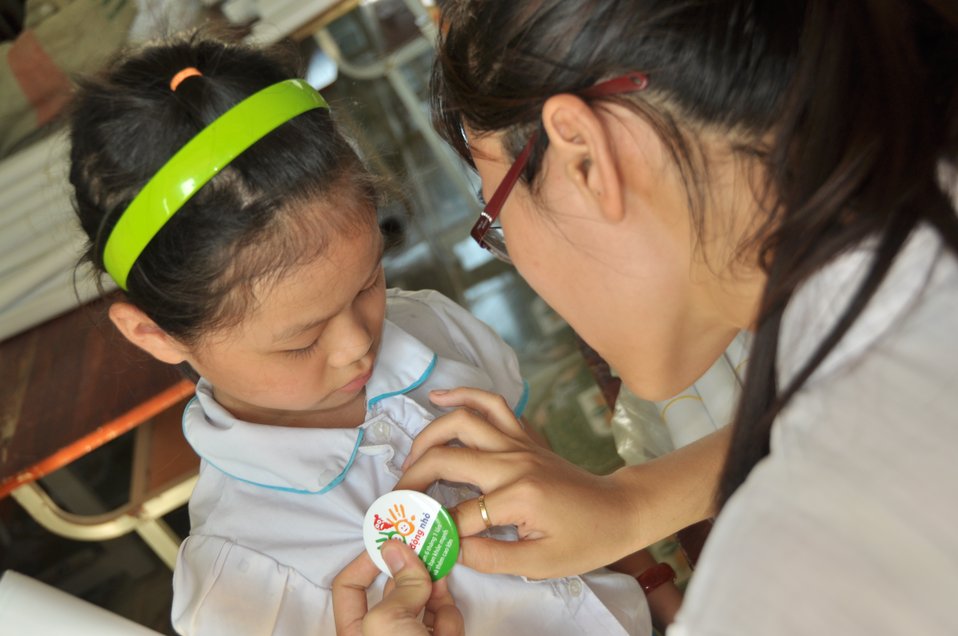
USAID supports deworming education and medication distribution in Bac Giang Province

May 20, 2013